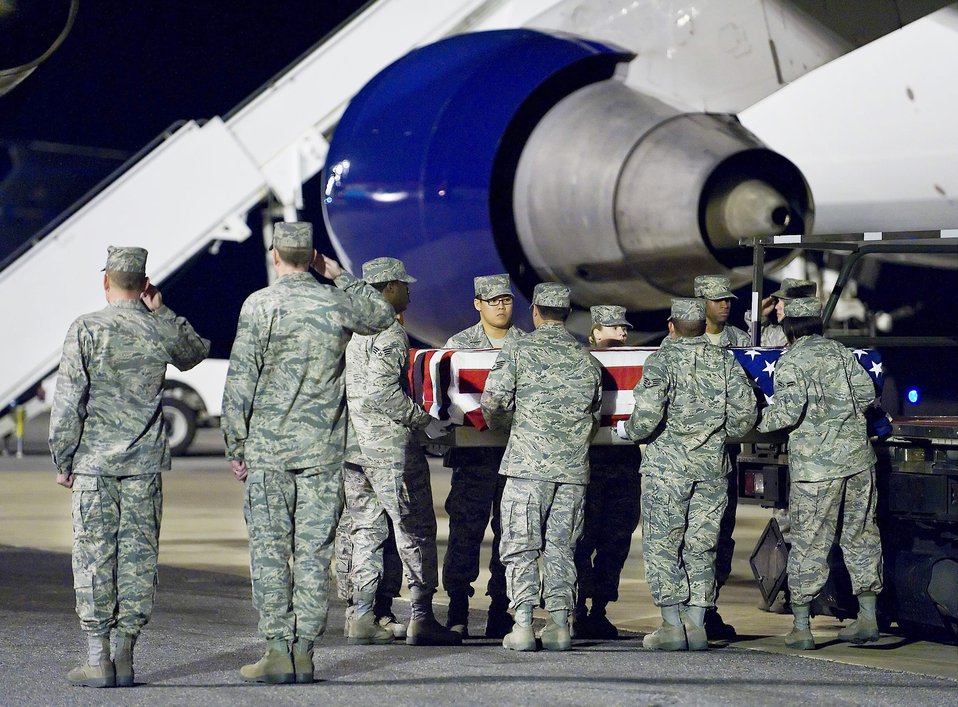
A dignified transfer

An Air Force Mortuary Affairs Operations Center carry team transfers the remains of Staff Sgt. Phillip A. Myers from the aircraft April 5, 2009, at Dover Air Force Base, Del. Sergeant Myers died April 4 near Helmand Province, Afghanistan, from wounds suffered from an improvised explosive device.